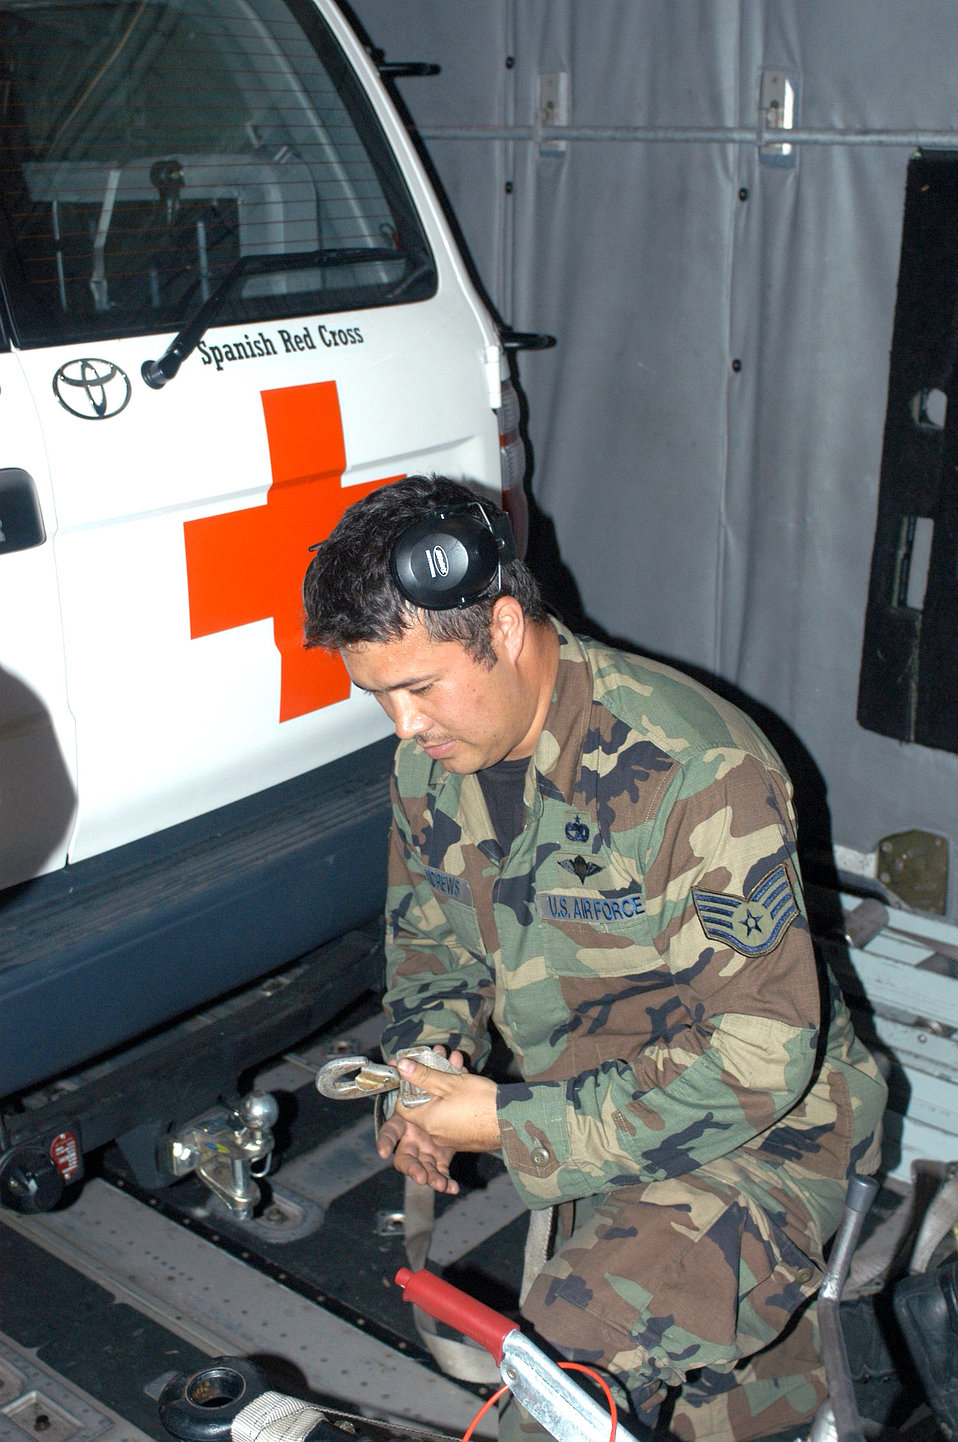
Airmen put relief on target

MEDAN, Indonesia -- A rigger with the 353rd Operations Support Squadron prepares to tiedown a Spanish Red Cross support vehicle in the cargo compartment of an MC-130H Combat Talon II here. The vehicle was delivered to Banda Aceh.